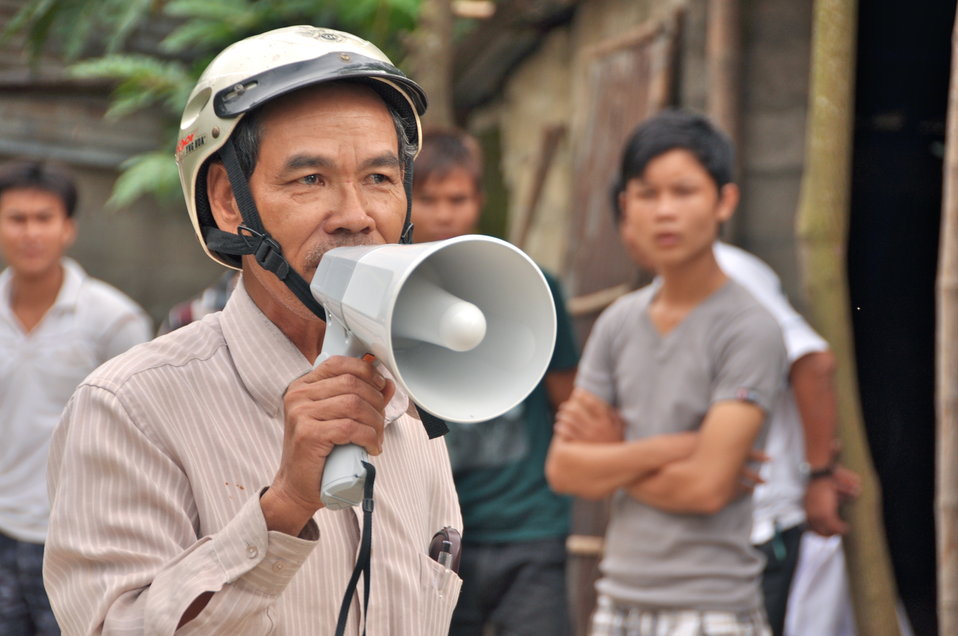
USAID and Save the Children support community evacuation drill and emergency preparedness in central Vietnam

Loc An Commune, Phu Loc District, Thua Thien Hue Province
December 4, 2012, Photo: Richard Nyberg, @USAIDVietnam